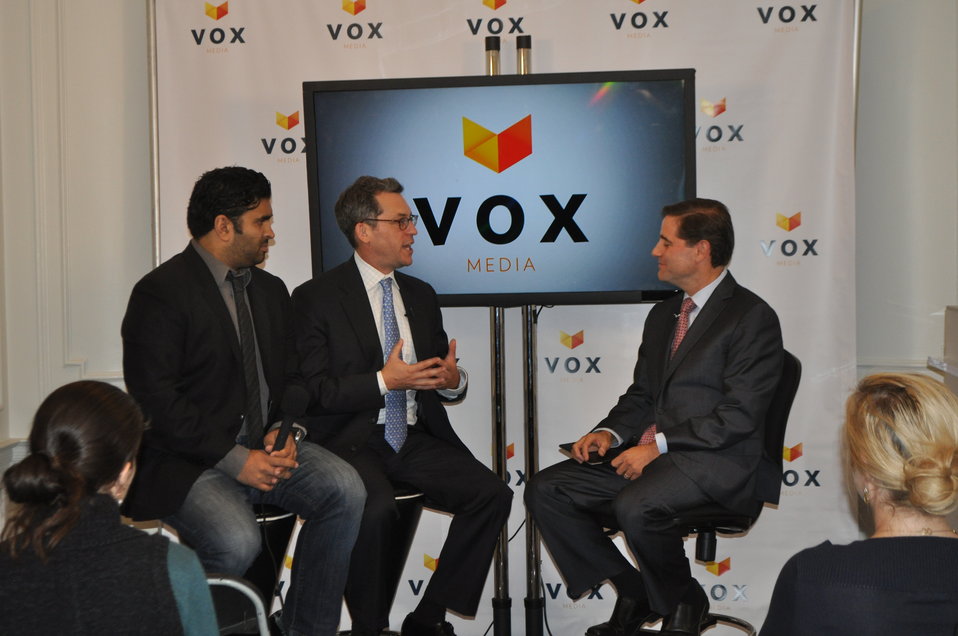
Broadband Challenges and Opportunities, at Vox Media - DSC 0708